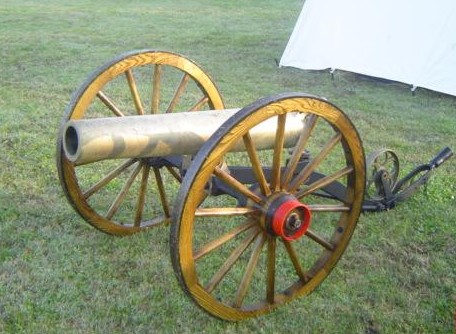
12 pound light Dahlgren Boat Howitzer